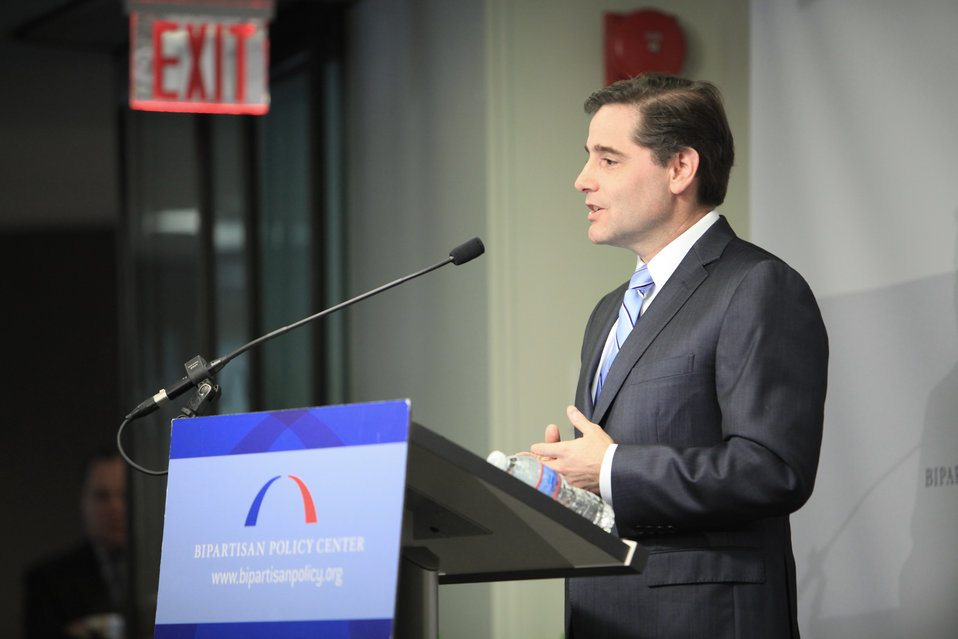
FCC Chairman Genachowski speaks about Cybersecurity at the Bipartisan Policy Center in Washington, DC, on February 22, 2012.